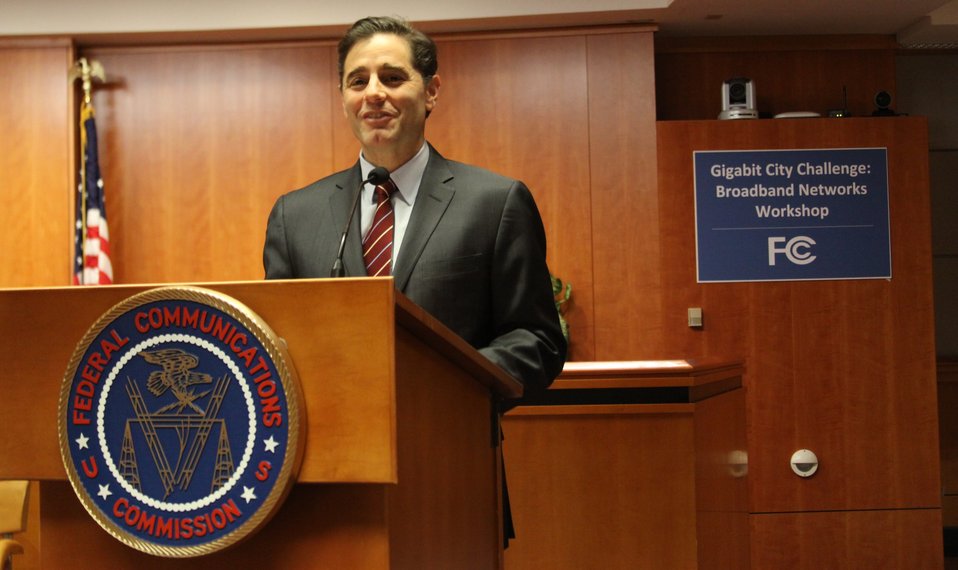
March 27, 2013 Gigabit City Challenge: Broadband Networks Workshop Opening Remarks given by Chairman Julius Genachowski